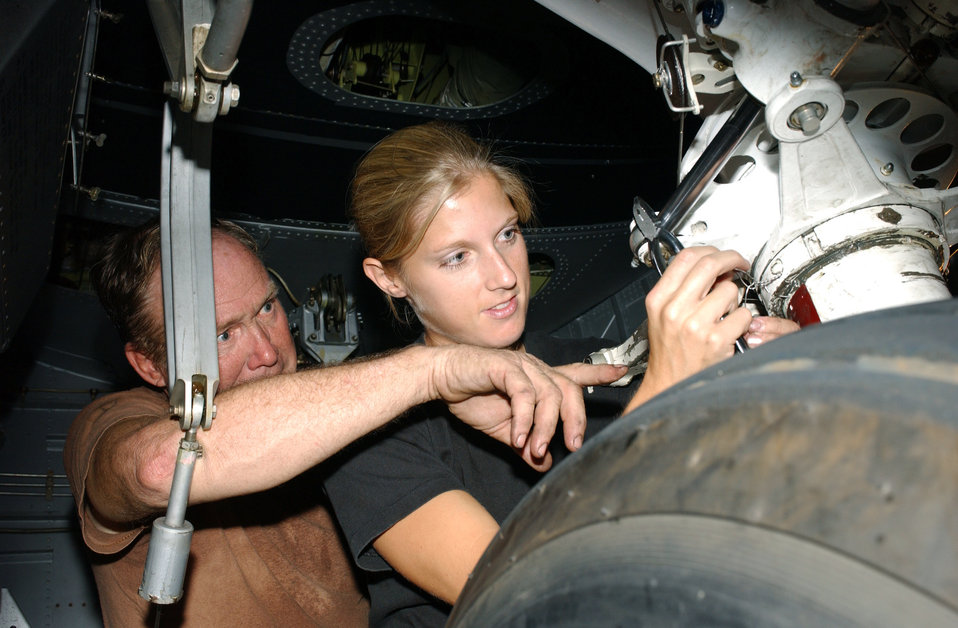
Fits right there

CHARLOTTE, N.C. -- Master Sgt. Hubert Ledford helps Senior Airman Shannon Wolfe install a cylinder in the front wheel unit of a C-130 Hercules here Oct. 3. Both Airmen are assigned to the North Carolina Air National Guard's 145th Airlift Wing.